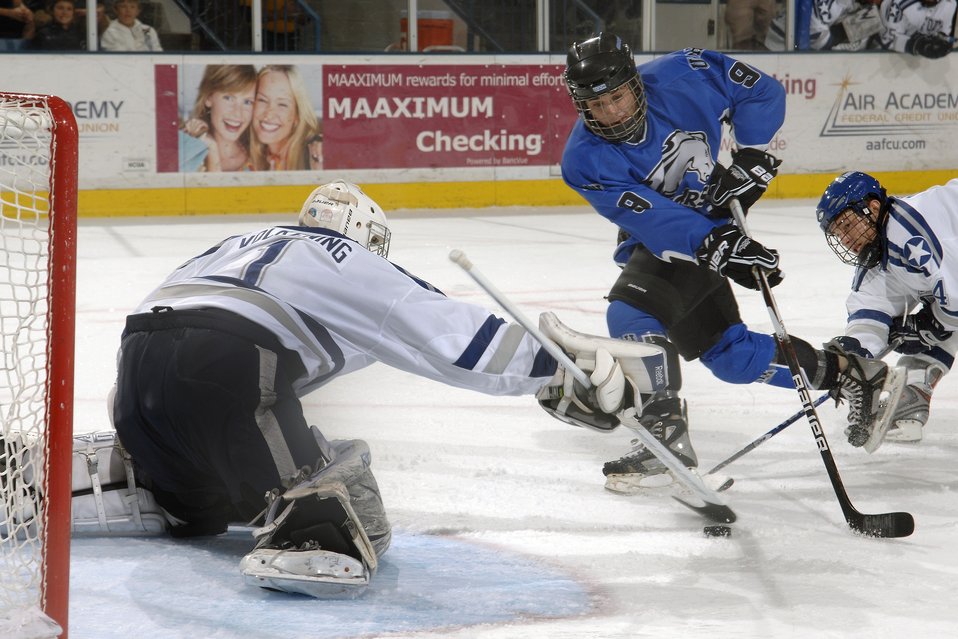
Falcons get out-Charged!

U.S. Air Force Academy senior goalie Andrew Volkening fights to stop the puck against the opposing University of Alabama-Huntsville Chargers Oct. 17, 2009, at the Cadet Ice Arena near Colorado Springs, Colo. The Chargers held off the Falcons for a 4-2 win as Volkening allowed four goals and made 23 stops. Air Force extended its school record regular-season sellout streak to 10 games as 2,534 fans watched in the 2,470-seat arena.